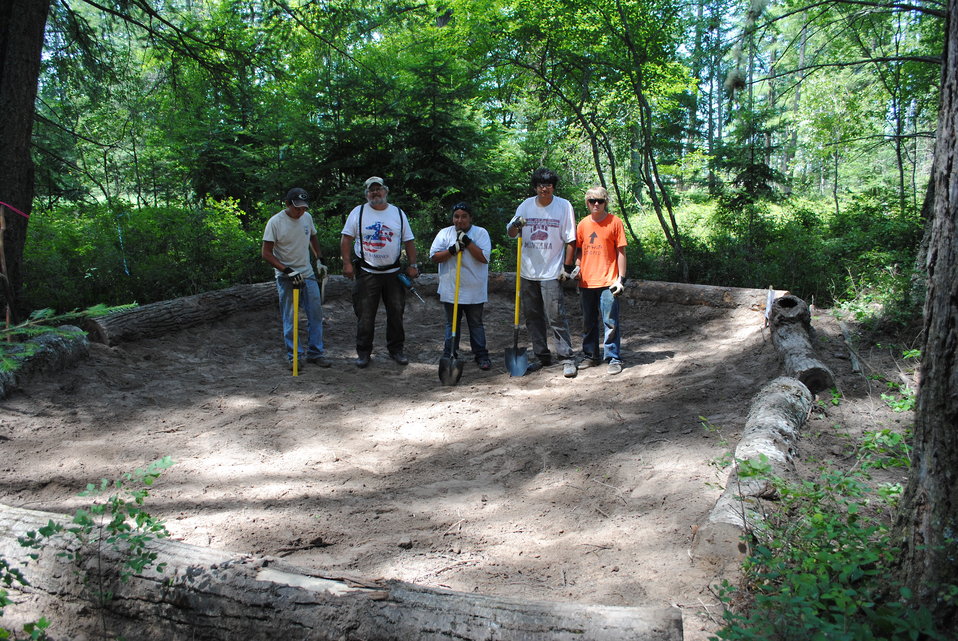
Creston National Fish Hatchery Outdoor Classroom Project

Montana Tribal Youth Conservation Corps
Nature Explore Outdoor Classroom Project

Austin Moran, Dave Bermal, Trisha Laffert, Chris Camel, and Nick Adamson working in the 'Messy Material' Classroom Site.

Evie Bradley/USFWS